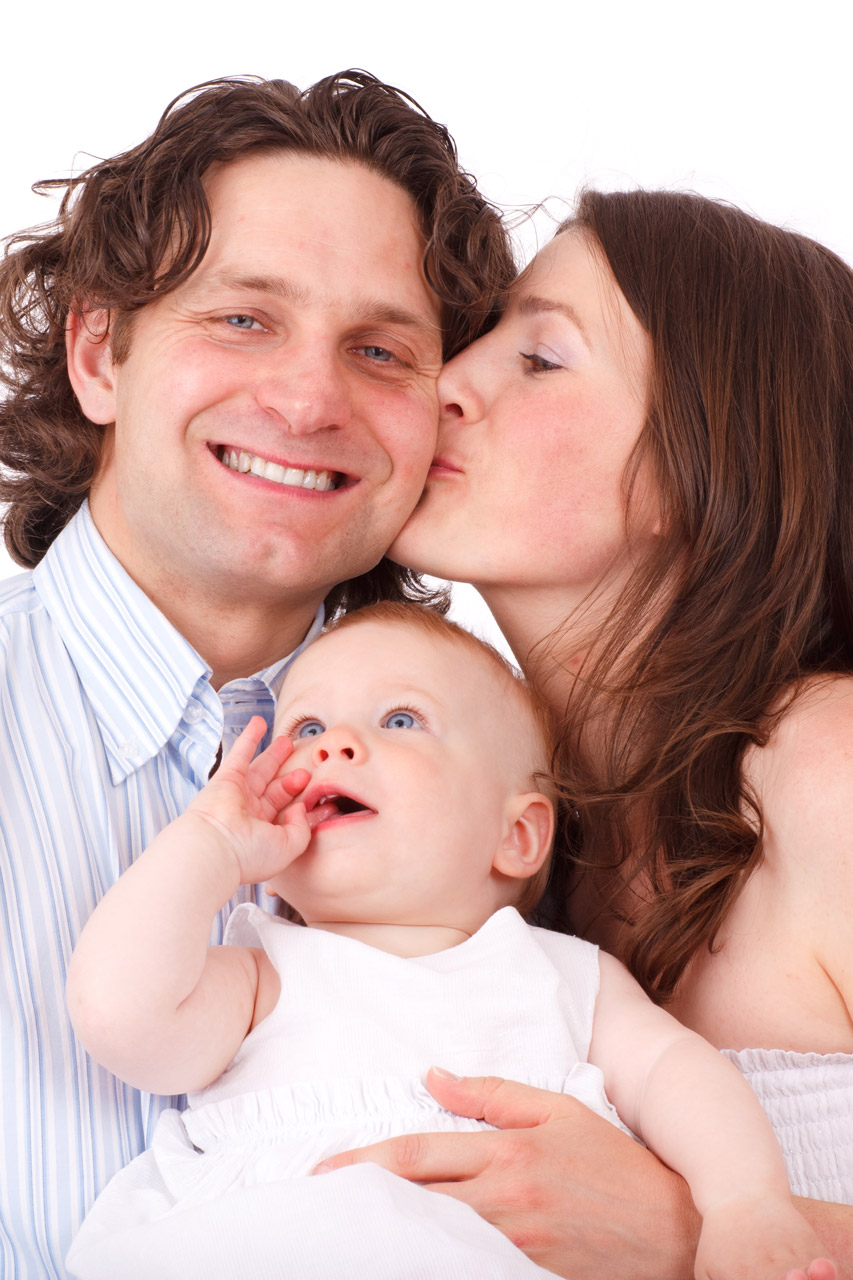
Kiss

Young woman giving a kiss to her husband while their baby girl looking at them.